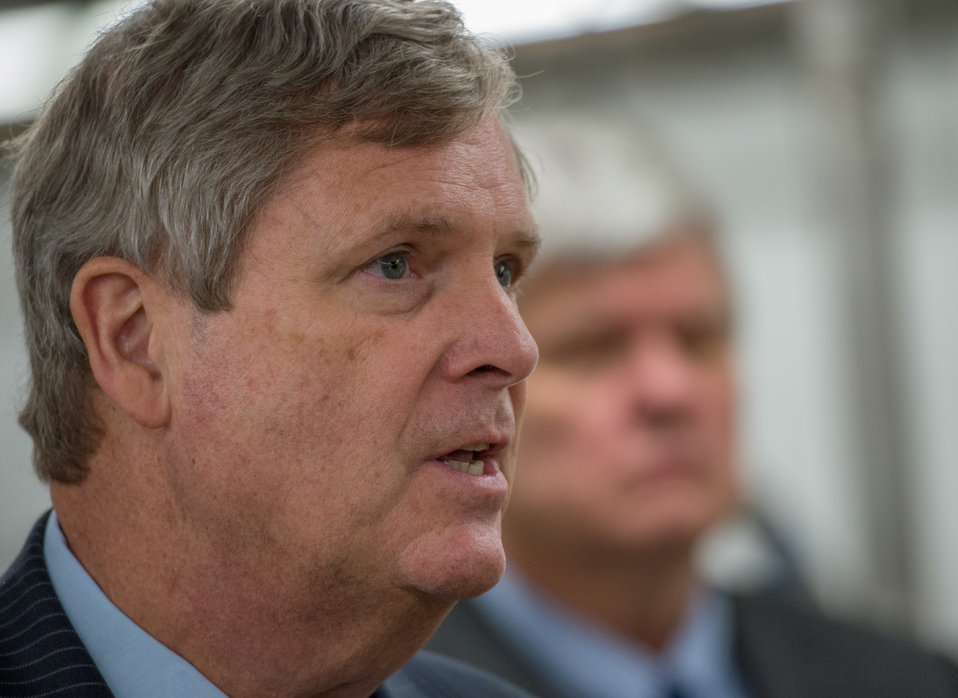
Agriculture Secretary Tom Vilsack speaks to staff and media at the U.S. Department of Agriculture's (USDA) Agricultural Research Service (ARS) National Center for Genetic Resources Preservation (NCGRP) in Ft. Collins, CO on Wednesday, Nov. 6, 2013. NCGRP is the largest agricultural gene bank facility in the U.S. The NCGRP staff conducts groundbreaking research to develop more efficient and effective means for preserving plant and animal germplasm, and for better understanding the genetic structure of these invaluable materials. Gene banks around the world have adopted the research findings, preservation techniques, and specialized technology developed by the NCGRP: many international scientists travel to the NCGRP for research and training.